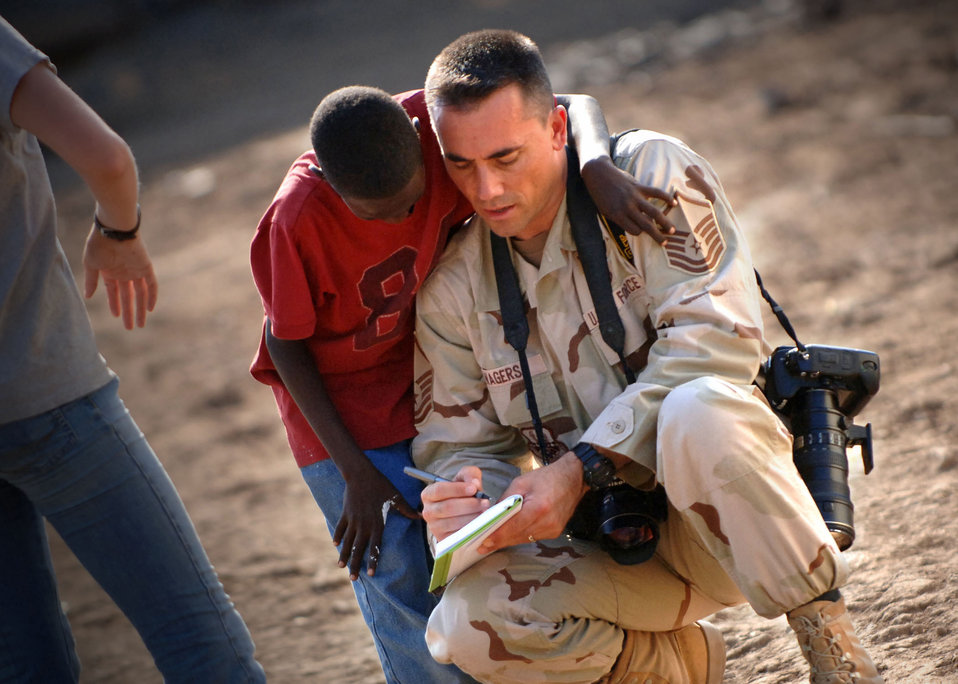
What's your name

Master Sgt. Scott Wagers writes down the name of boy after taking his photograph Dec. 12 at an orphanage in Djibouti City, Djibouti. Sergeant Wagers is a photographer from Combined Joint Task Force - Horn of Africa.